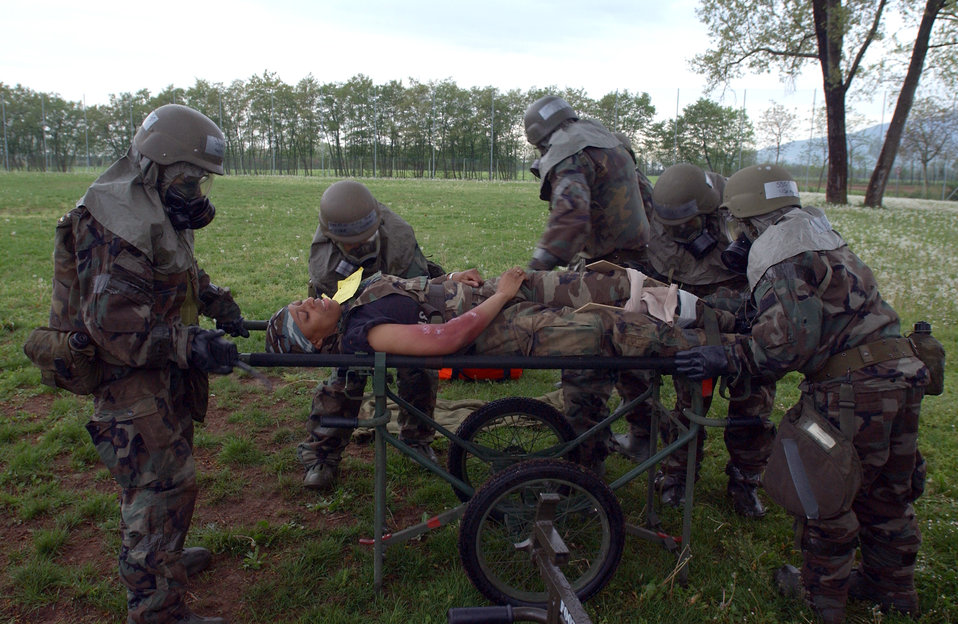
Medics train to be combat-ready

Airmen from the 31st Medical Group at Aviano Air Base, Italy, go through an exercise scenario during combat medical readiness training on Thursday, April 27, 2006. The training prepares Airmen for deployments and rapid response in emergency situations.